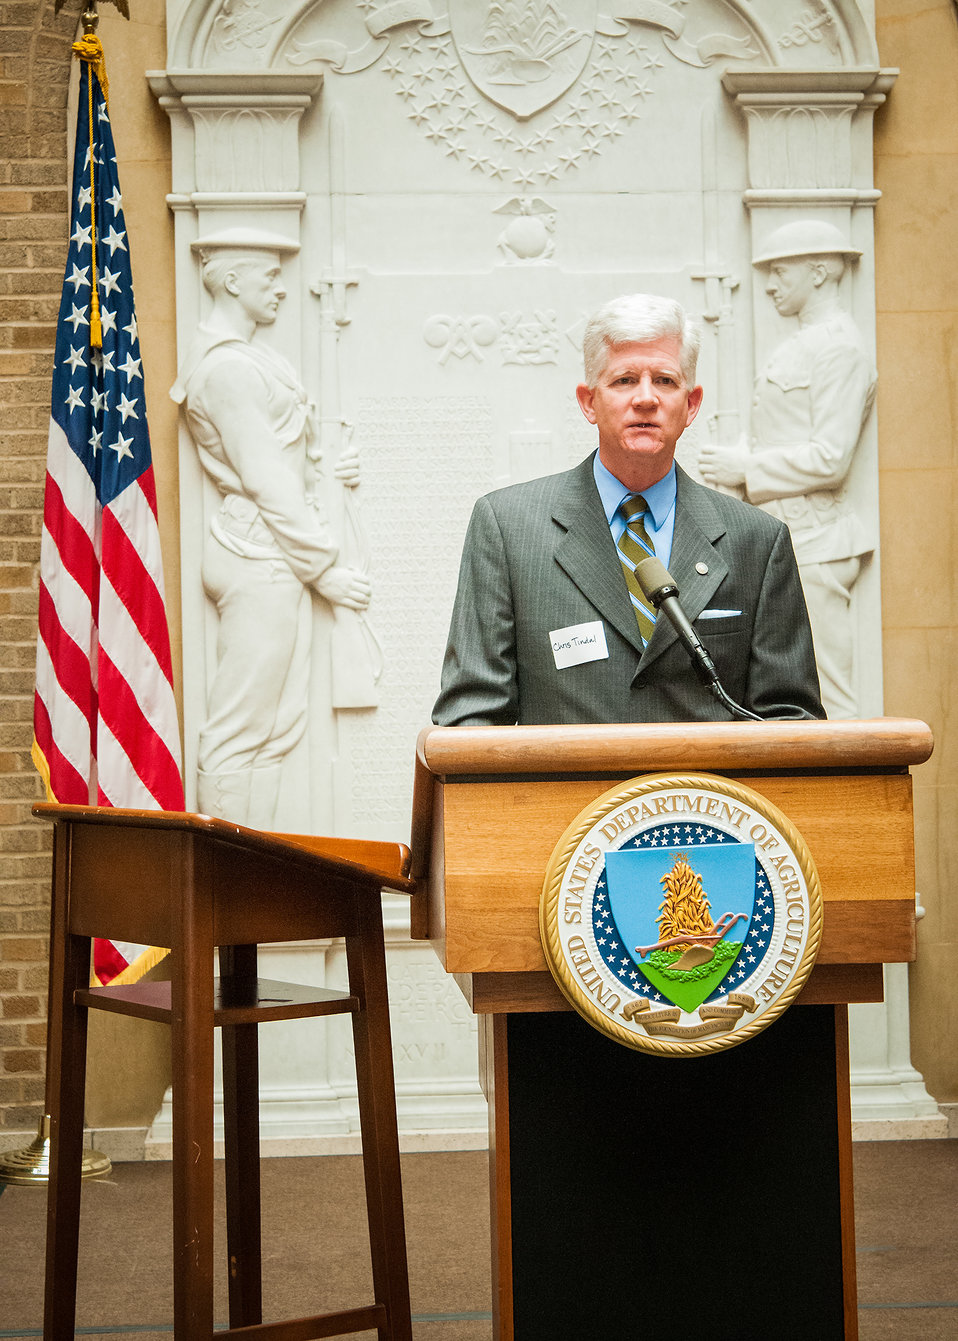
Office of the Deputy Assistant Secretary of the Navy for Energy Director for Operational Energy Chris Tindal discussed the Department of Defense’s (DOD) role in Biofuels at the U.S.-Israel Bio-Challenge Symposium at the U.S. Department of Agriculture (USDA) in Washington, D.C. on Thursday, Apr. 18, 2013.